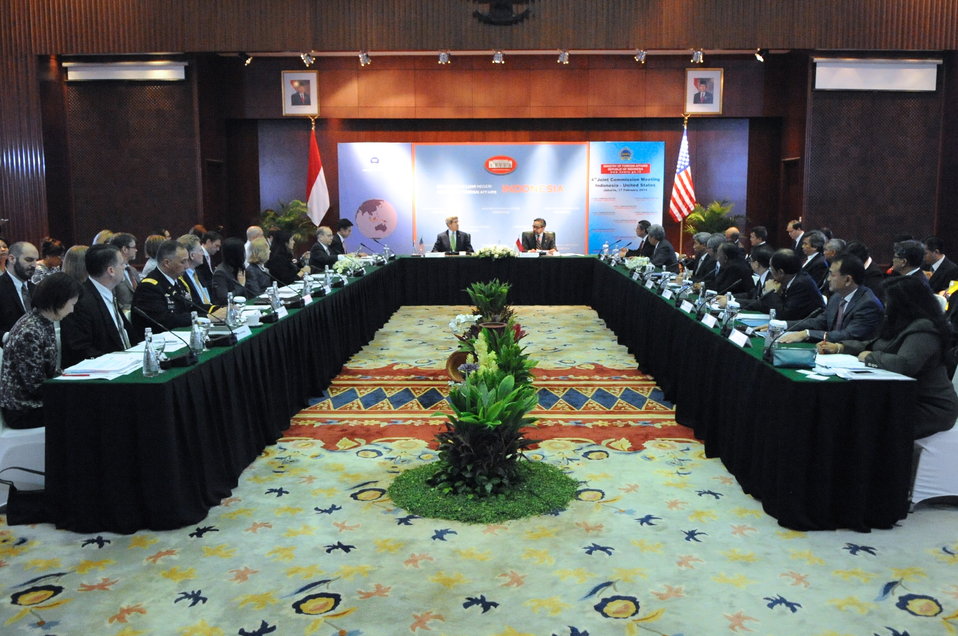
U.S.-Indonesia Joint Commission Meeting Convenes in Jakarta

A U.S.-Indonesia Joint Commission Meeting, convened by U.S. Secretary of State John Kerry and Indonesia Foreign Minister Marty Natalegawa, gets underway at the Ministry of Foreign Affairs in Jakarta, Indonesia on February 17, 2014.